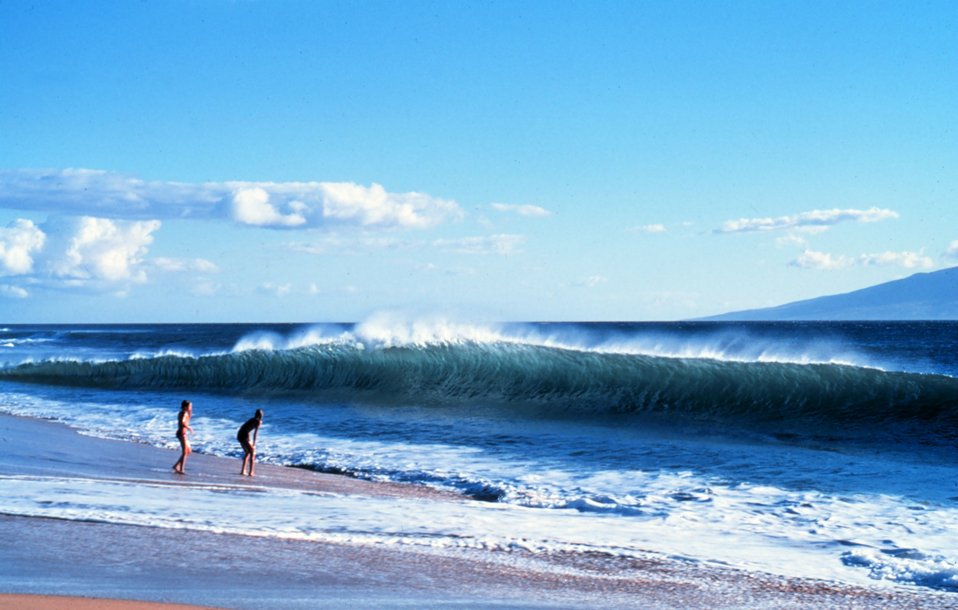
Two vacationers dwarfed by the shorebreak as an offshore wind whips spray off the crest of the wave.